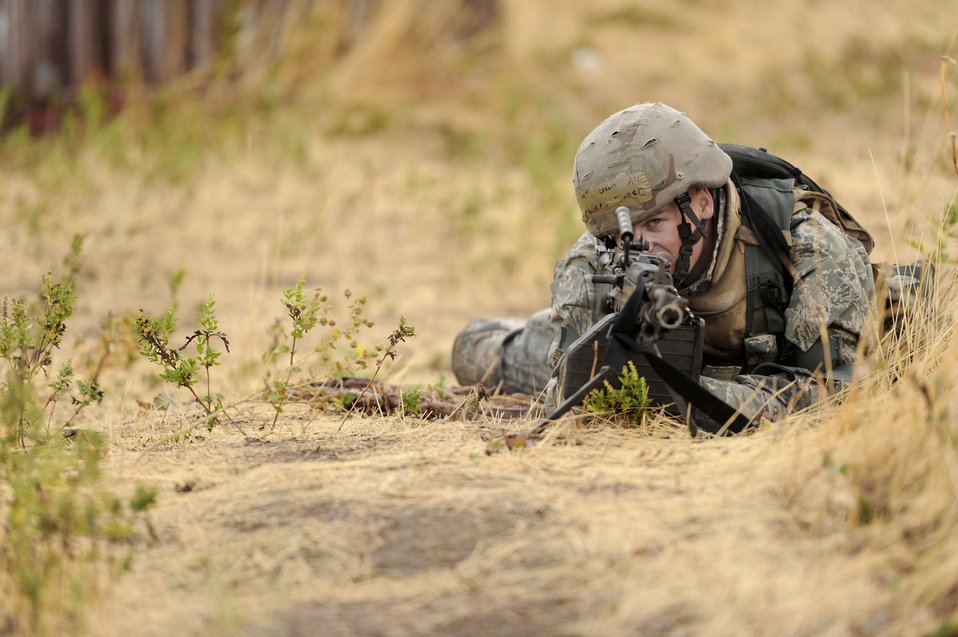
Operational Readiness Exercise 10-4

Airman 1st Class Jared Hughes sets up a perimeter during an Operational Readiness Exercise 10-4 Oct. 7, 2010, at Hill Air Force Base, Utah. The exercise will prepare Airmen for an upcoming inspection next month. Airman Hughes is assigned to the 419th Security Forces Squadron.